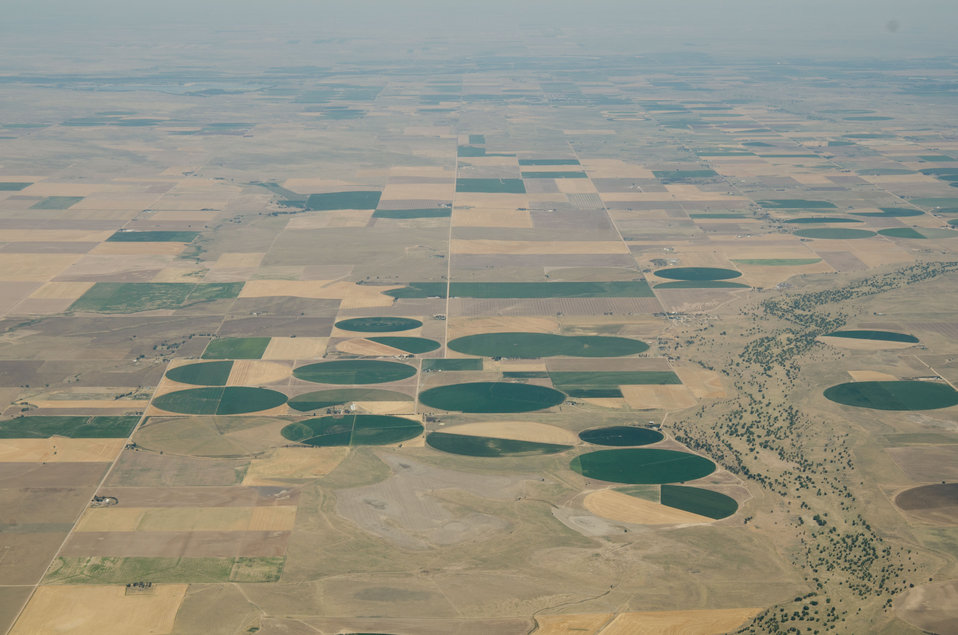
Aerial views of drought affected Colorado farm lands, near Wiggins, Colorado on Saturday, July 21, 2012. Green areas are irrigated, the yellow areas are dryland wheat crops.